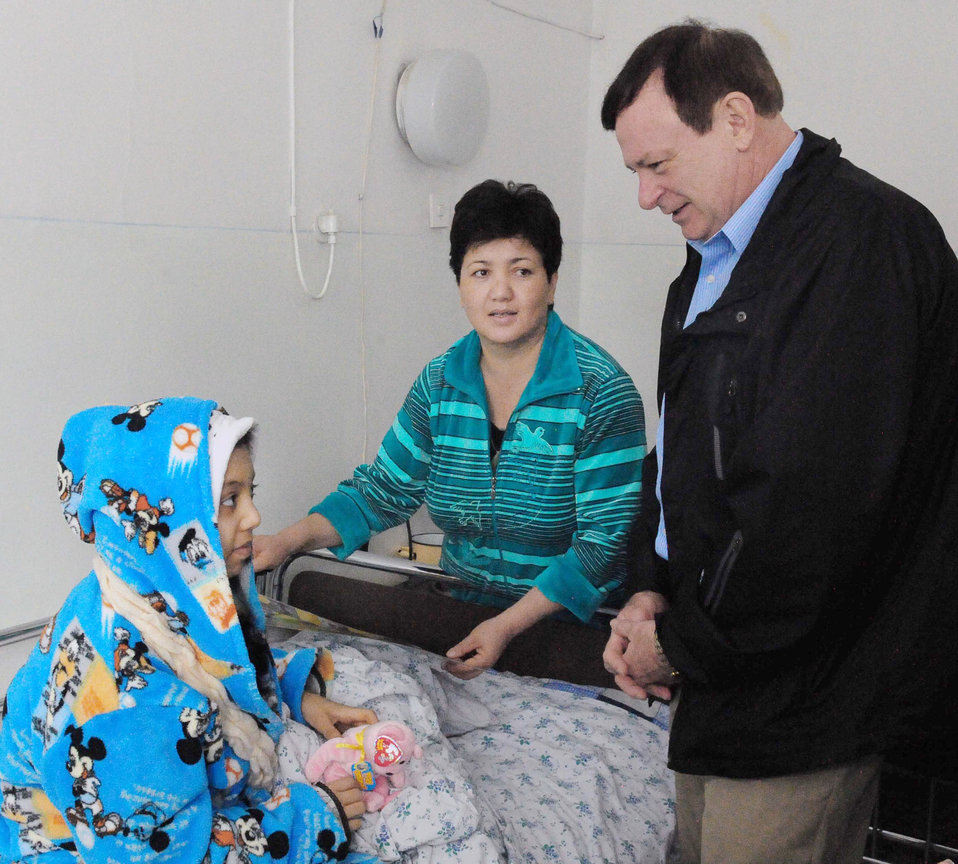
Chaplain (Lt. Col.) James Kinsey speaks to Firuza Nurahunova, a 13-year-old Kyrgyz girl, and her mother, Shakura, March 21, 2010, at the Transit Center at Manas, Kyrgyzstan. Ms. Nurahunova was the 150th child to receive life-saving surgery funded by Airmen at the Transit Center. Chaplain Kinsey is the 376th Air Expeditionary Wing head chaplain.